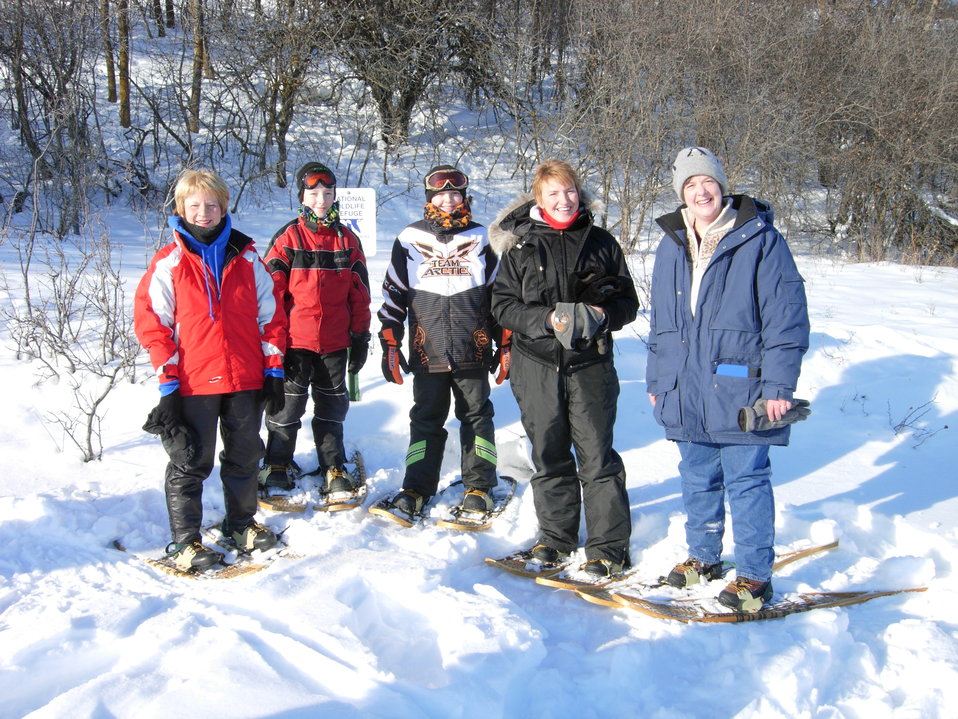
Group Happy to be Snowshoeing

These people are happy to be snowshoeing!
From Left to Right: Joyce Solberg, Minot, Dalton, Dakota and Melissa Peterson, Kenmare and Caroline Downs, Bowbells.